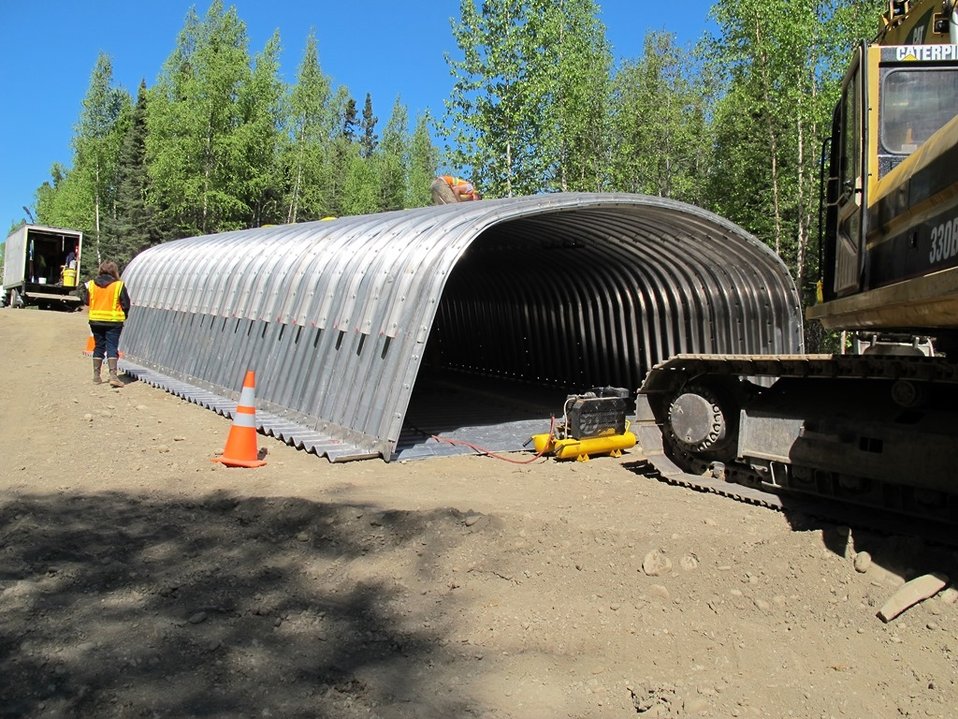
Goose Creek's fish-friendly culvert

Installation of this new 20 ft culvert on Goose Creek opened up 10 miles of salmon spawning and rearing habitat upstream in 2013. USFWS